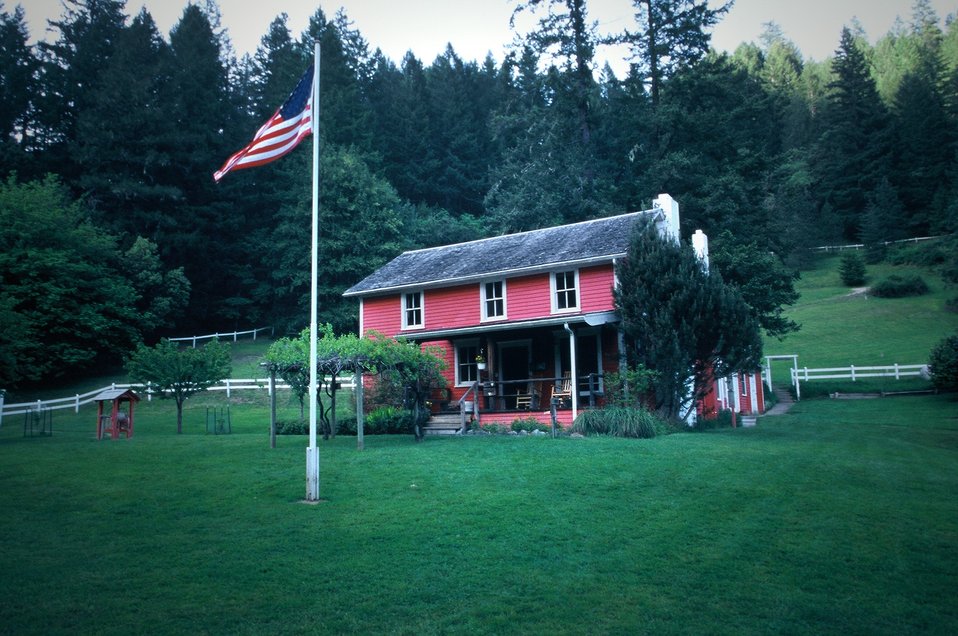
Wild section of the Rogue River from Grave Creek to Foster Bar May 19 to May 22.